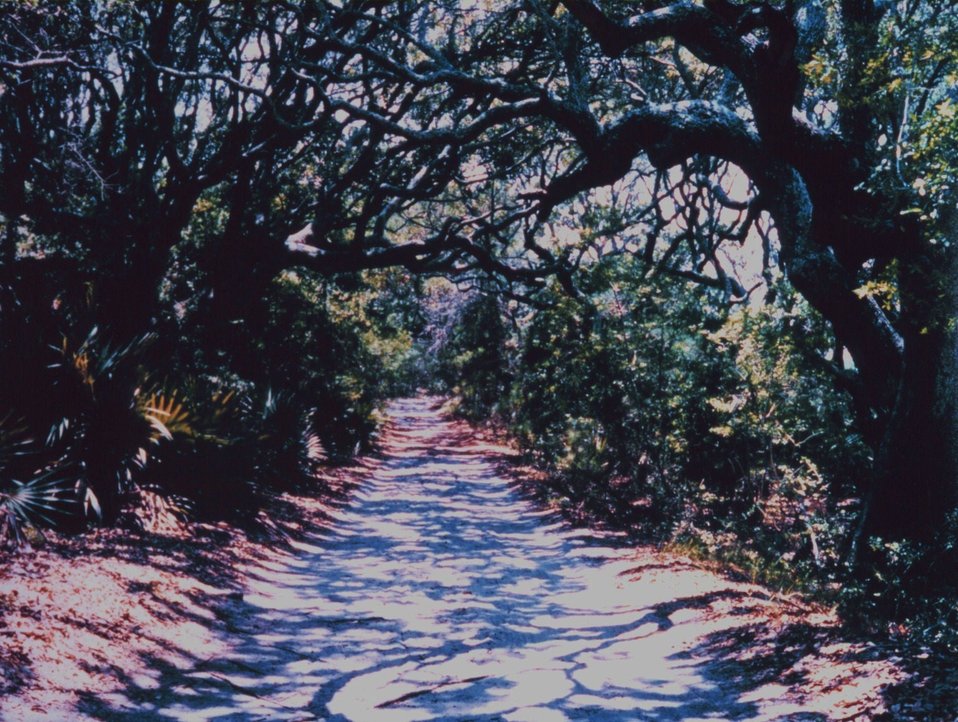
A road through the live oak forest on Cabretta. The shadows weave a wonderful texture on the road surface.